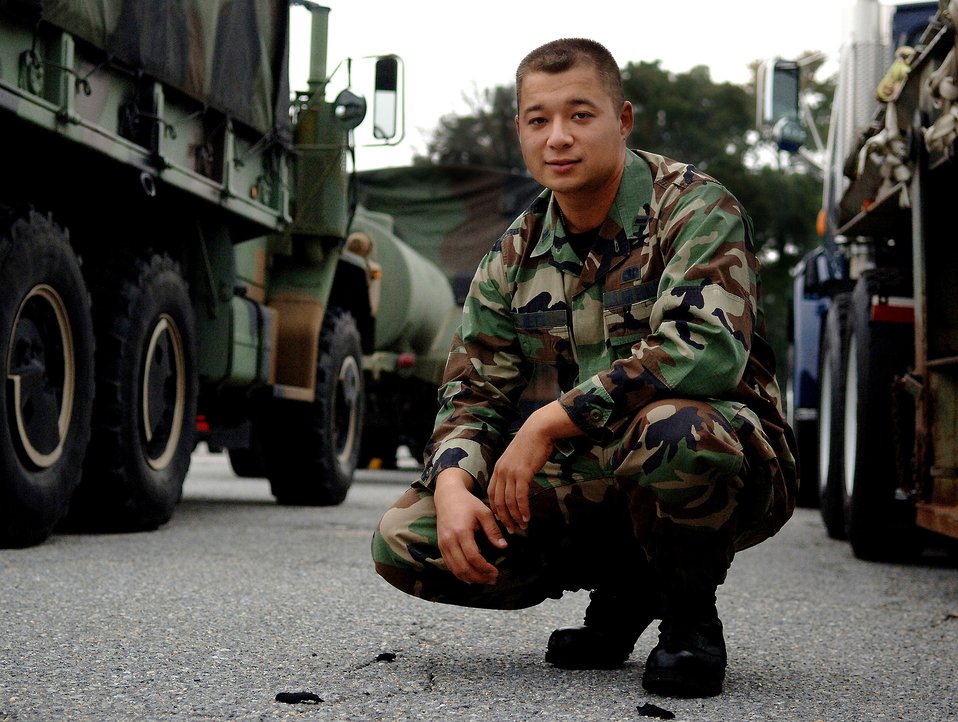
AF Memorial: Leadership always at head of the bus

1st Lt. Shaenan Jett coruches between vehicles Oct 11 at Andrew Air Force Base, Md. Lieutenant Jett is a flight commnader with the 316th Logistics Readiness Squadron. He is involved with the Air Force Memorial dedication ceremony Oct. 14 in Arlington, Va.